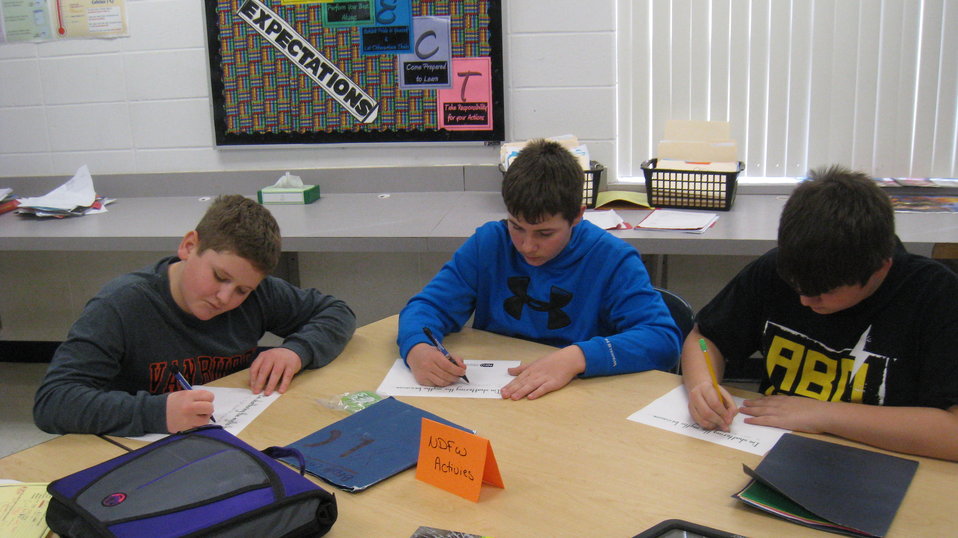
Iowa: NDFW 2014

Teenagers from the Van Buren County SAFE Coalition's, Youth Leadership Council (YLC) in Keosauqua, Iowa participate in various events during National Drug Facts Week, 2014.